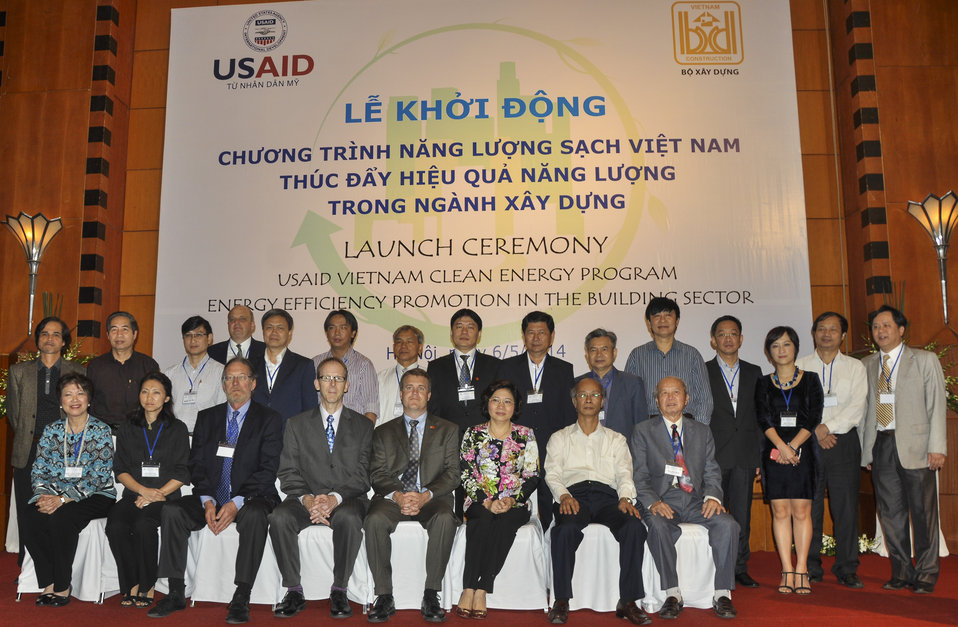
Launching of USAID Vietnam Clean Energy Program.

Hanoi, May 6, 2014.